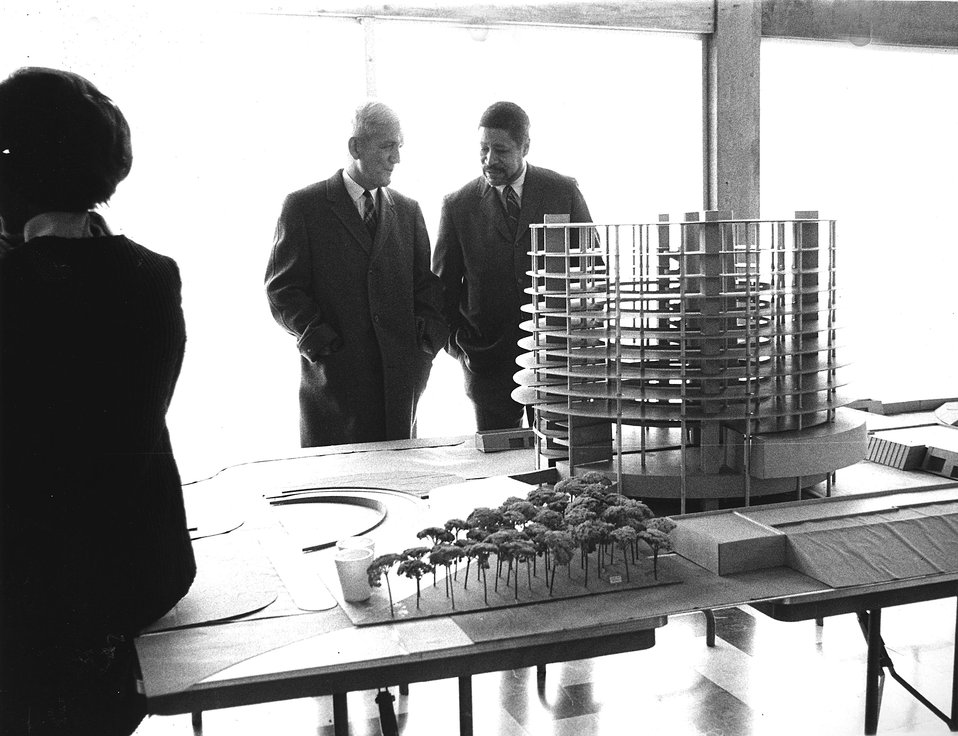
Norman Ramsey, President, Universities Research Association, Higgins Professor of Physics, Harvard University and Thomas Downs, Chief Architect, DUSAF, view a model of the core building and Linac in the foyer of The Curia. 1968